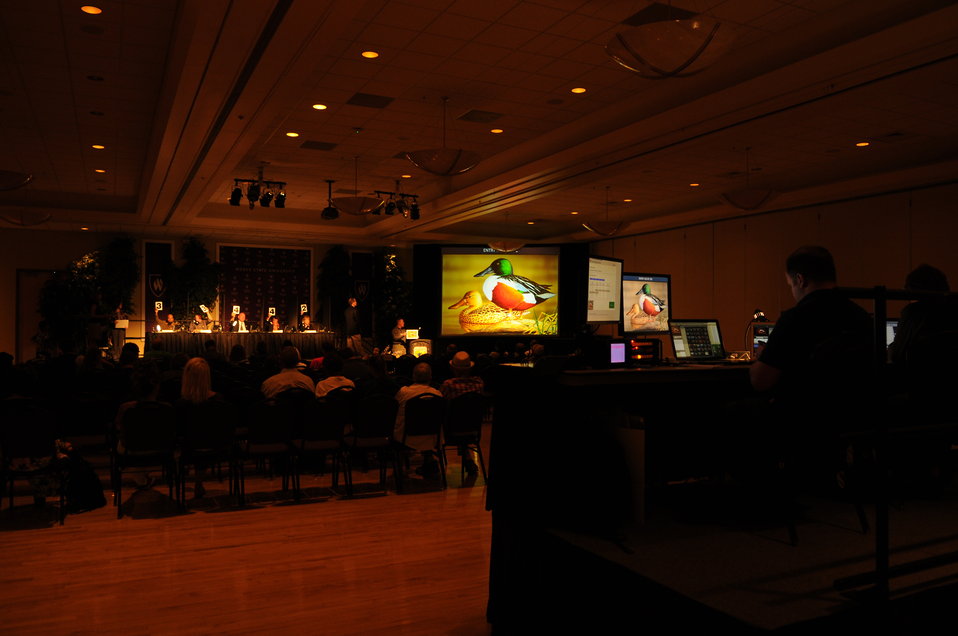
Judging

The U.S. Fish & Wildlife Service sponsored the 2012 Federal Duck Stamp Art Contest September 28 and 29 in Ogden, Utah, at Weber State University. A panel of five judges was responsible for choosing the art work used to design the 2013-2014 Migratory Bird Hunting and Conservation Stamp.